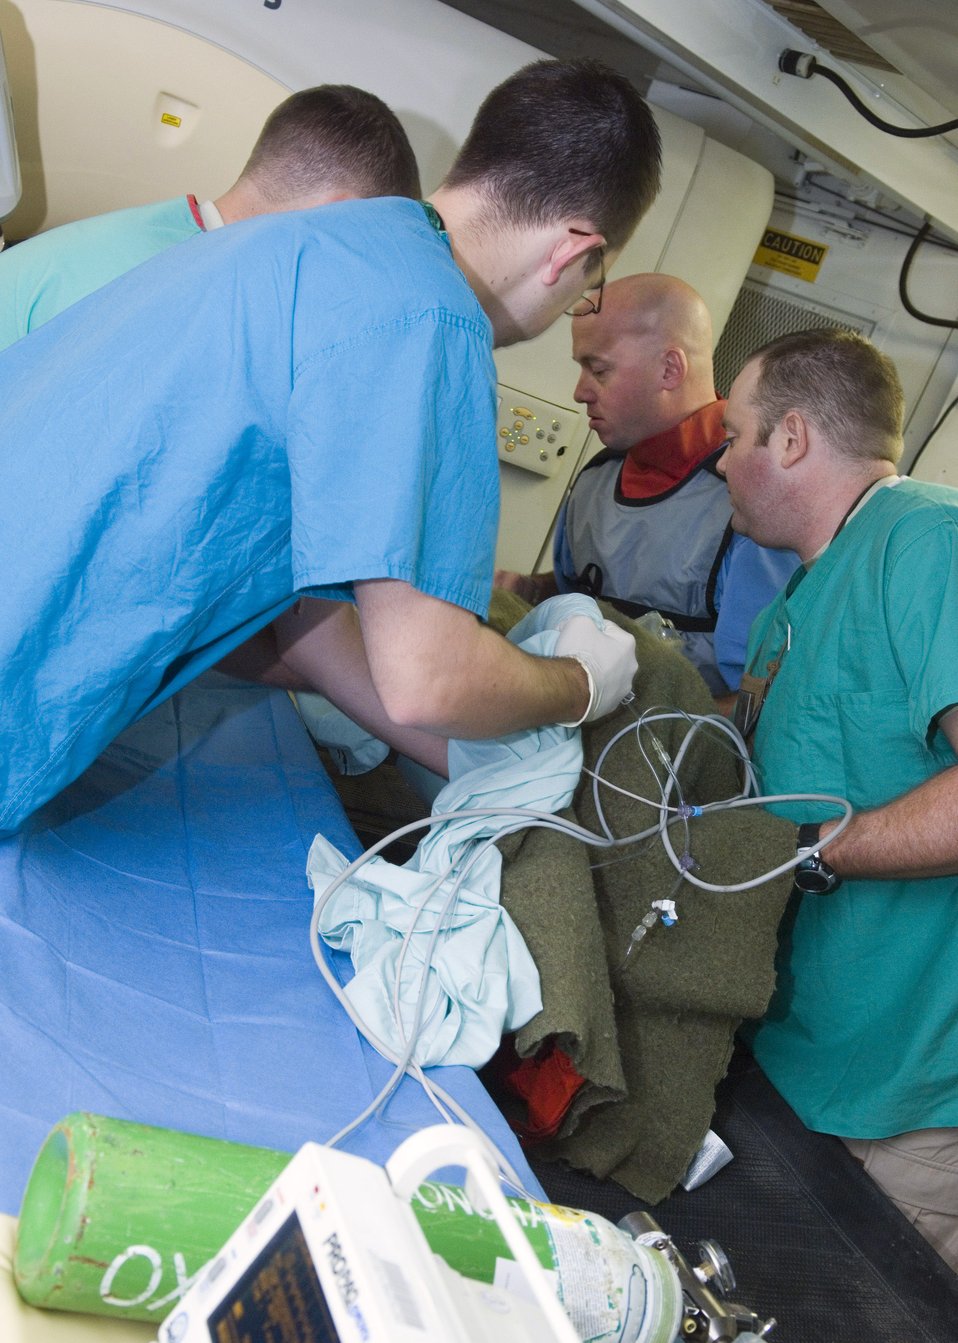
Balad radiologists scan to save lives

Emergency room and radiology Airmen lift an Iraqi boy from the CT scanner to a litter at the Air Force Theater Hospital at Balad Air Base, Iraq. The boy was scanned to more accurately check for internal bleeding or other bodily trauma.